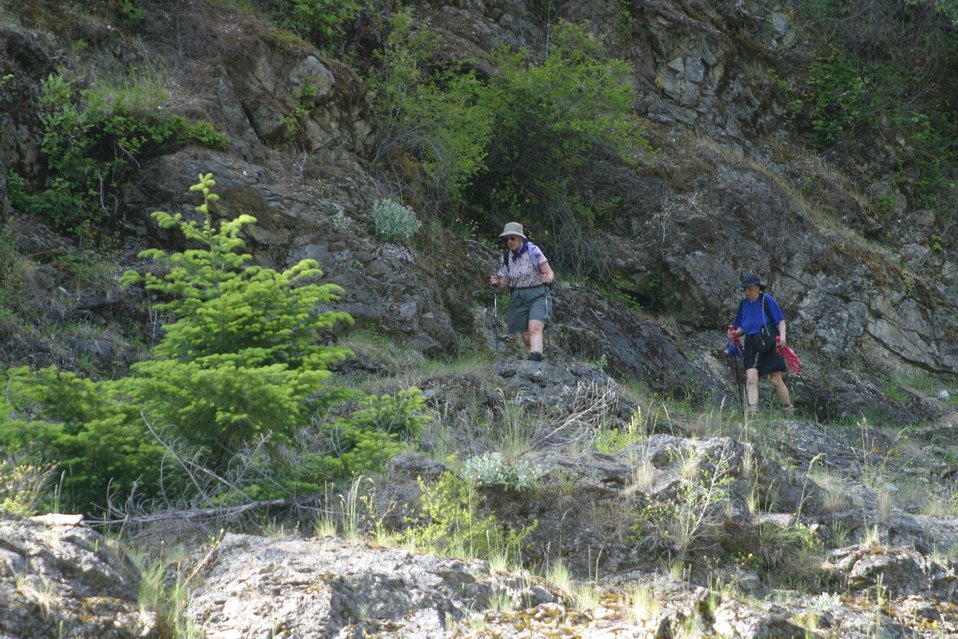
Wild section of the Rogue River from Grave Creek to Foster Bar May 19 to May 22.